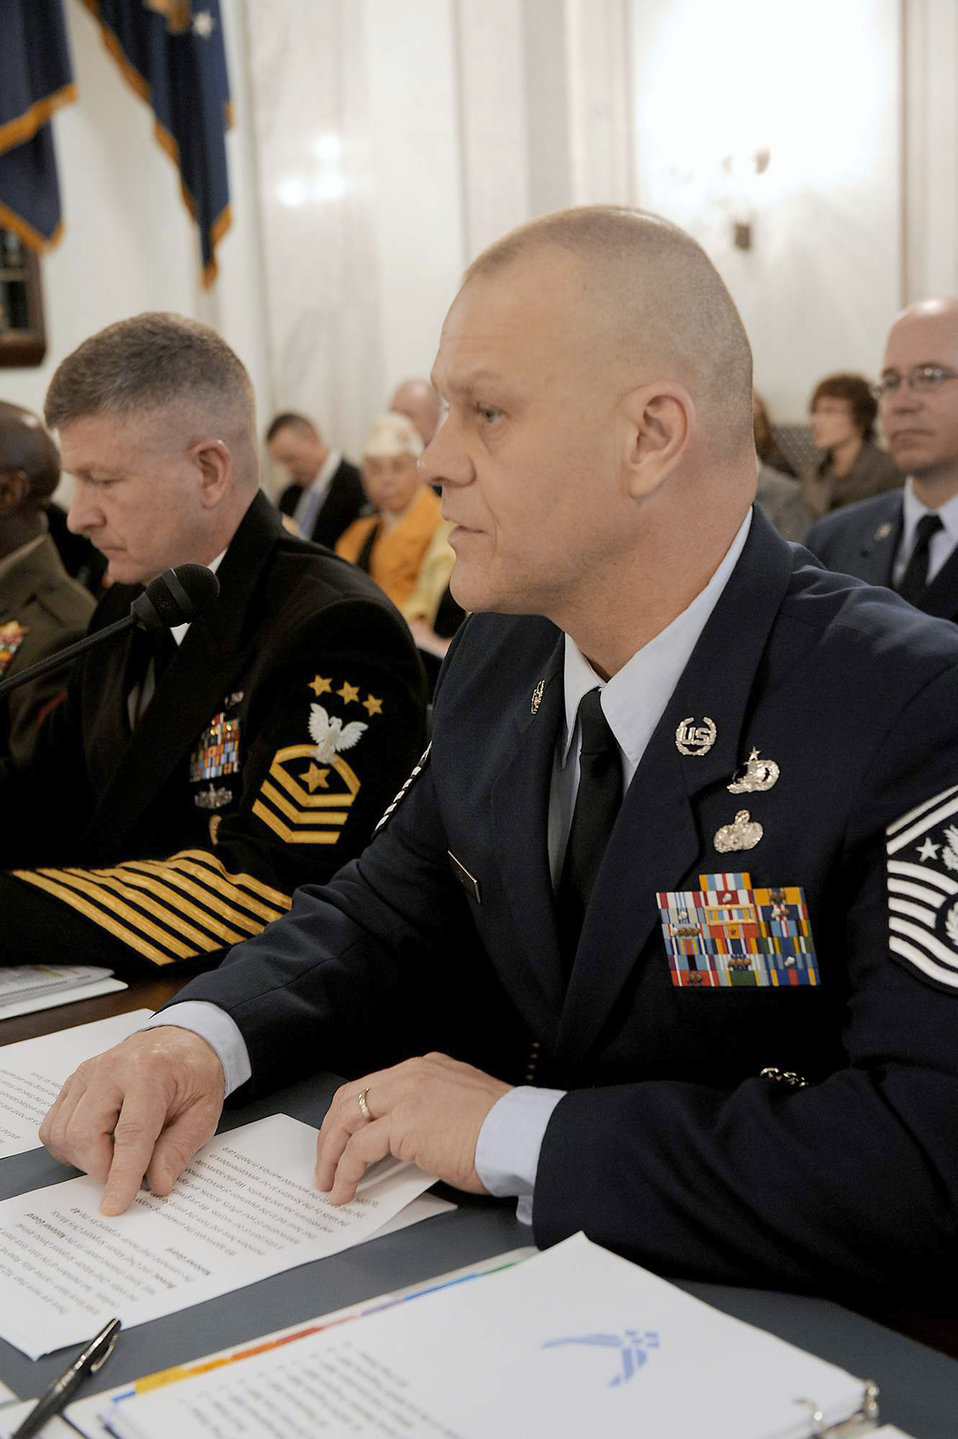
Chief Roy

Chief Master Sgt. of the Air Force James A. Roy (right) gives his opening statement during a Senate Armed Services subcommittee hearing on military personnel issues April 13, 2011, in Washington. Seated next to Chief Roy is Master Chief Petty Officer of the Navy Rick West, and both were joined on the panel by Sgt. Maj. of the Army Raymond Chandler III and Sgt. Maj. of the Marine Corps Carlton Kent.